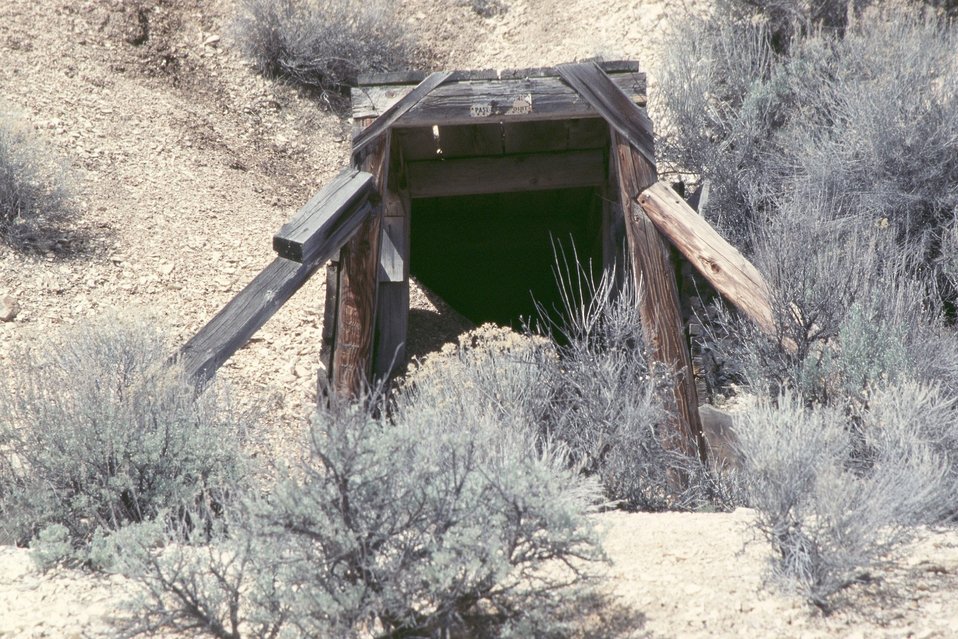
AML Glass Buttes, G2, Burns District. This short adit in the hillside is shored up by wooden supports. It was active in 1957. During 9/2003 the wooden supports were removed so that it wouldn't be an attractive safety hazard to recreationists and the adit completely caved in.